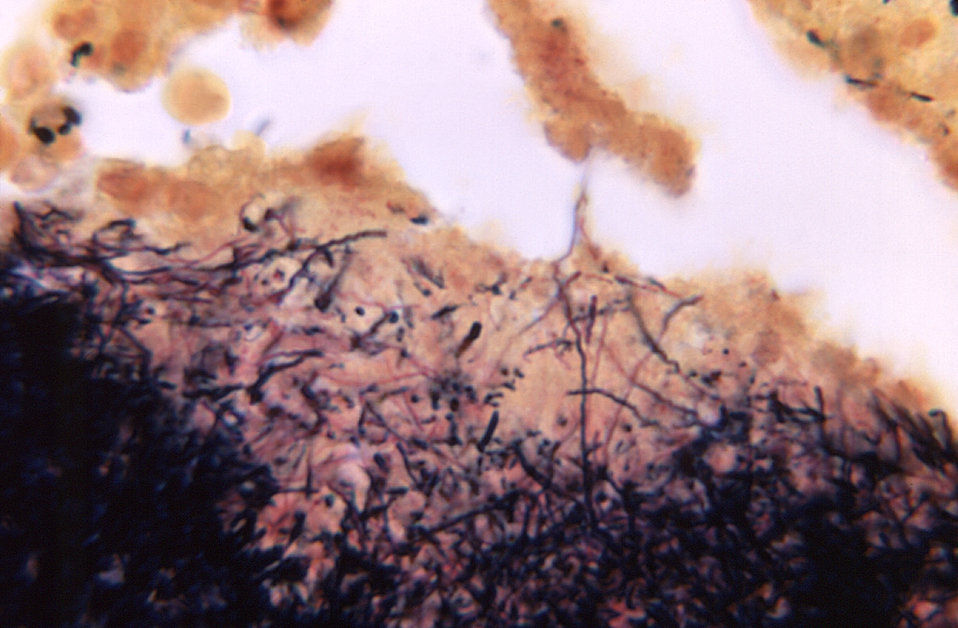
Magnified 400X, this Brown & Brenn-stained photomicrograph revealed the presence of an unidentified pathogen found on the edge of a granule located in a sample of a canine plural exudate, in a case of actinomycosis.